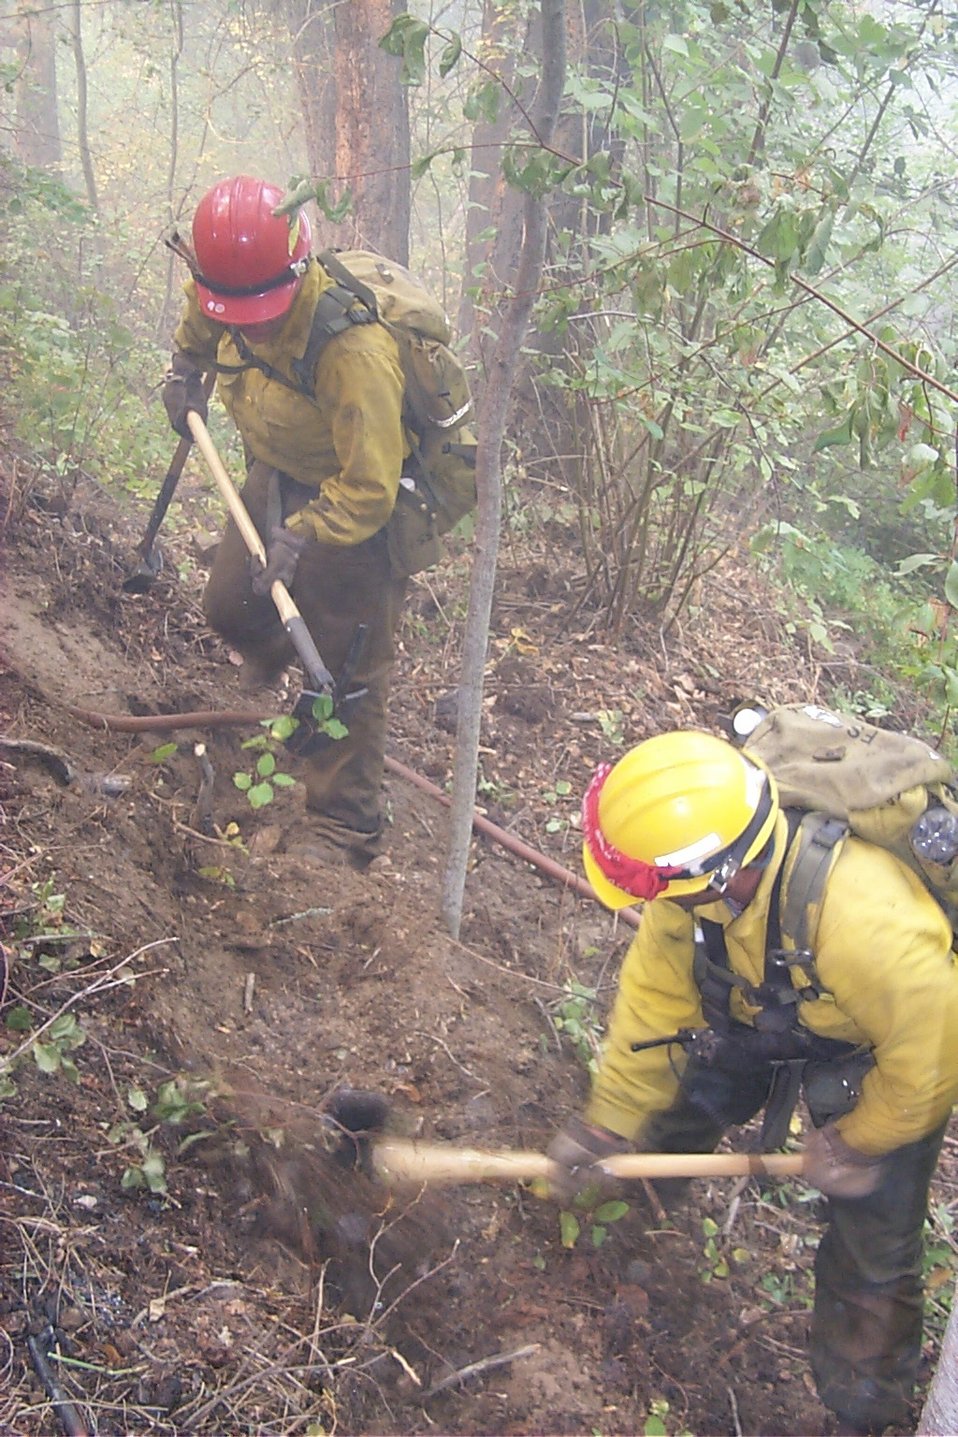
Line crew Fire Clearwater Fire Salmon Field Office USRD Upper Snake River District